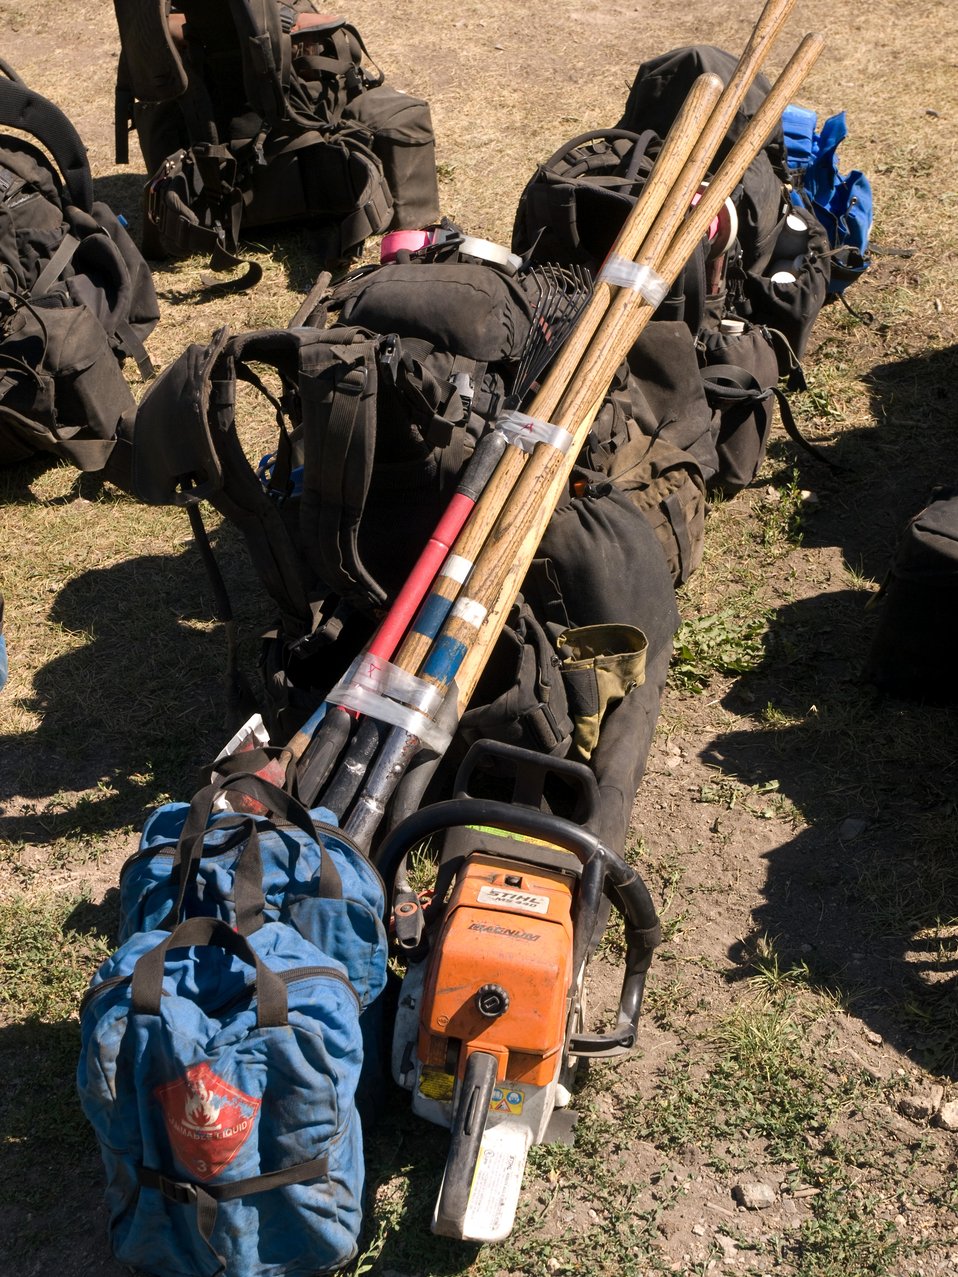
Firefighter’s gear is packed and ready for transport to the fire line of the Lodgepole Fire. The Lodgepole Fire in the Salmon-Challis National Forest near Challis, ID began on Jul. 20, 2013 by lightning has consumed approximately 20,080 acres and is approximately 15% contained.